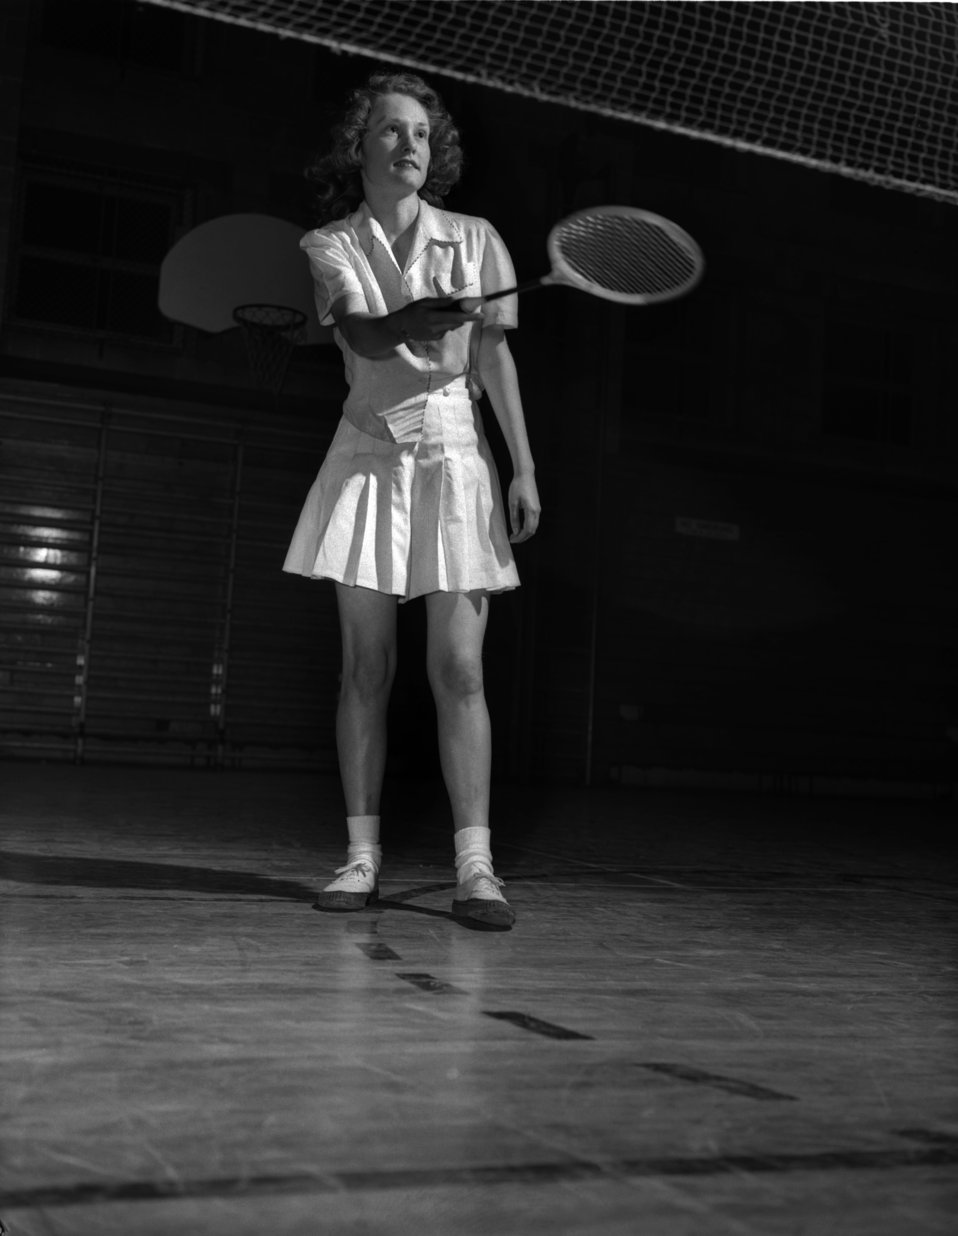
Badminton Oak Ridge

3348-1 DOE photo Ed Westcott 3-19-1947 Oak Ridge Tennessee